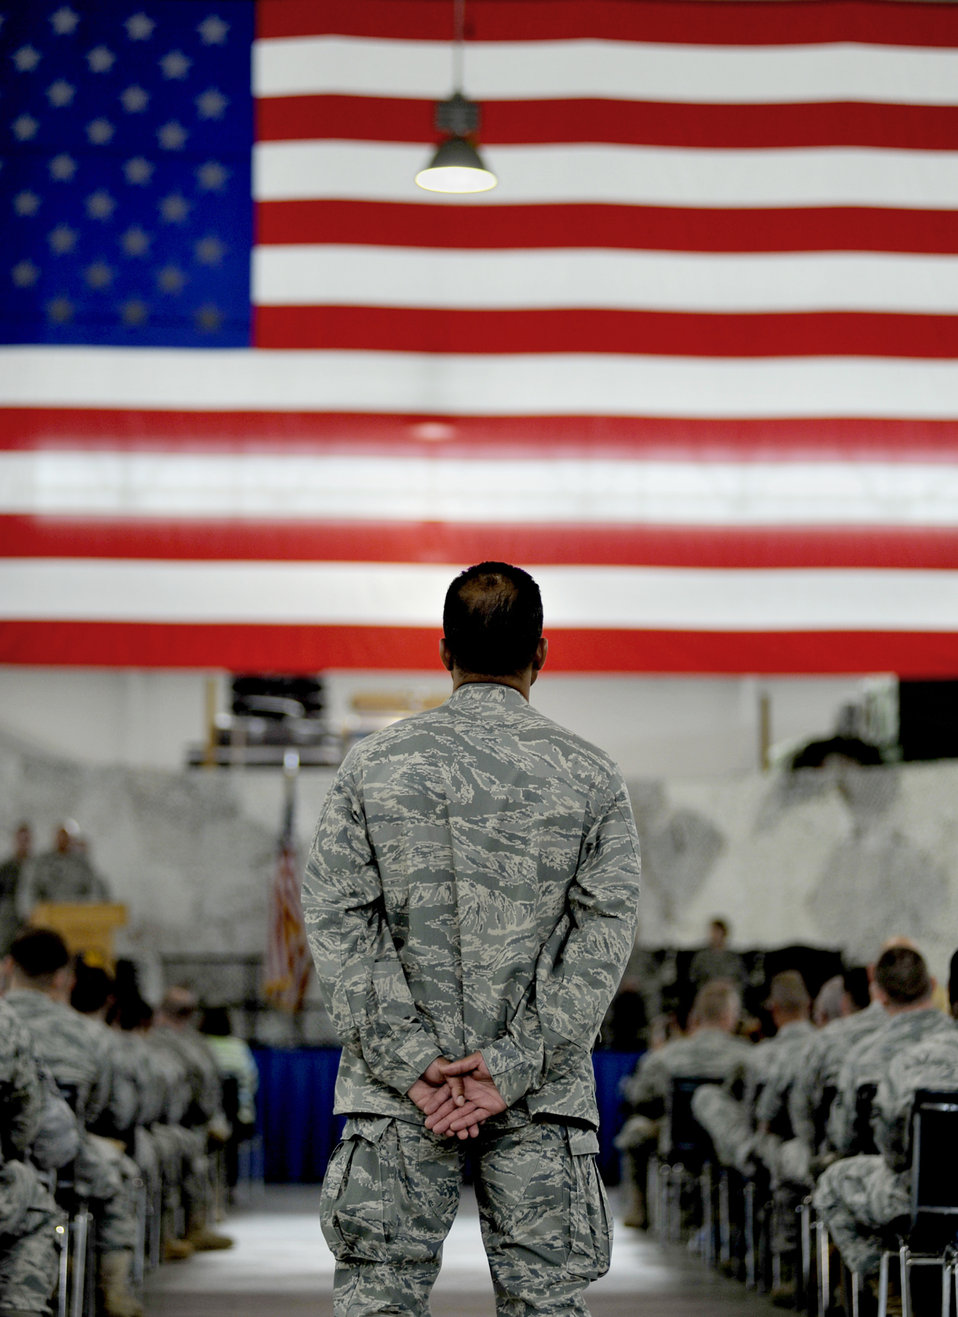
816th CRG

Lt. Col. Tom Highsmith observes the inactivation ceremony of the 816th Contingency Response Group June 11, 2010, at Joint Base McGuire-Dix-Lakehurst, N.J. The inactivation is part of an Air Force ordered restructuring that boosts the capabilities of the wing's remaining groups and assists the creation of an Air National Guard CRG. Colonel Highsmith is the 816th Global Mobility Squadron director of operations.